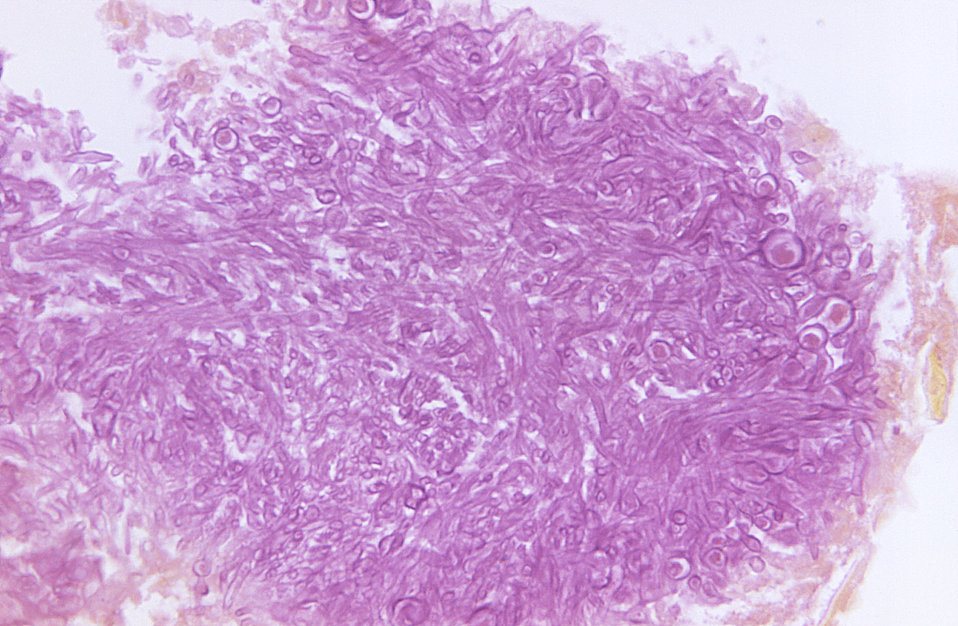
Magnified 400X, four times greater than PHIL 10921, this photomicrograph revealed some of the cytoarchitectural morphology associated with a number of mycetoma granules, which were found to be present in this human tissue sample of unknown origin.